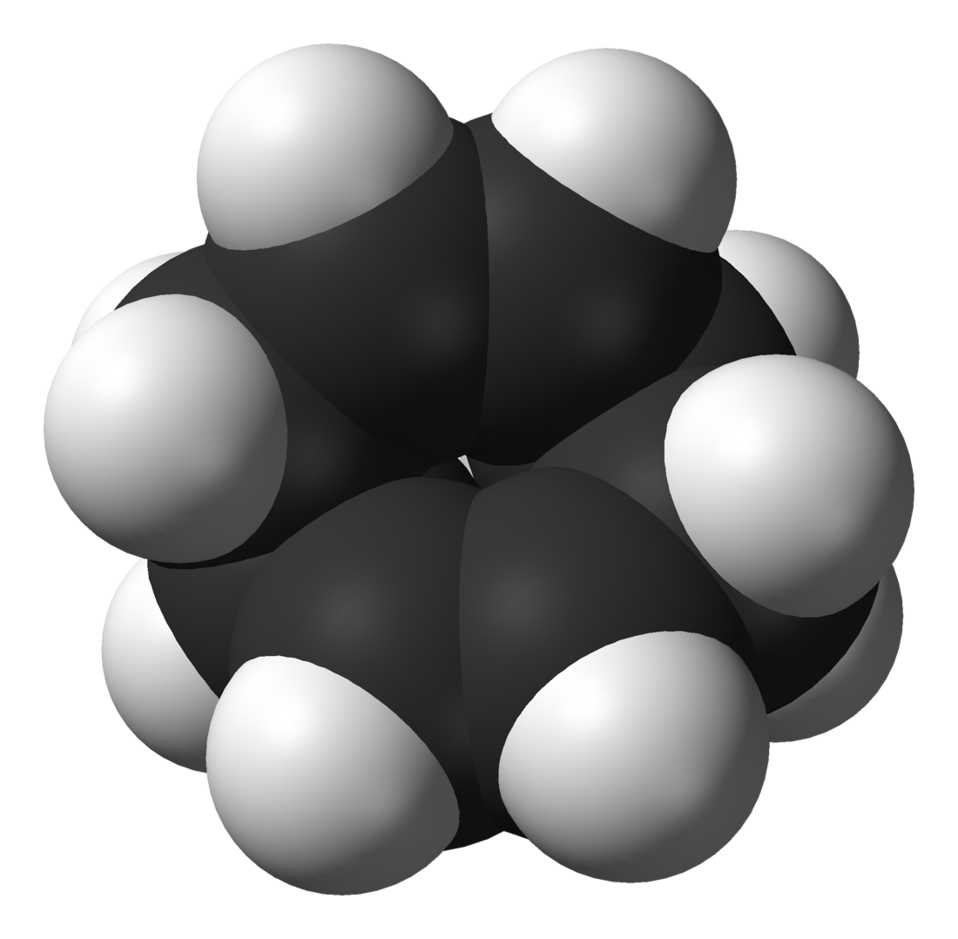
Space-filling model of the 1,5-cyclooctadiene molecule (COD), C8H12. Electron diffraction data from Kolbjorn Hagen, Lise Hedberg, and Kenneth Hedberg (1982). 'Molecular structure and conformation of cis,cis-1,5-cyclooctadiene'. J. Phys. Chem. 86 (1): 117-121. DOI:10.1021/j100390a024. Model constructed in Spartan '04 Student Edition. Image generated in Accelrys DS Visualizer.